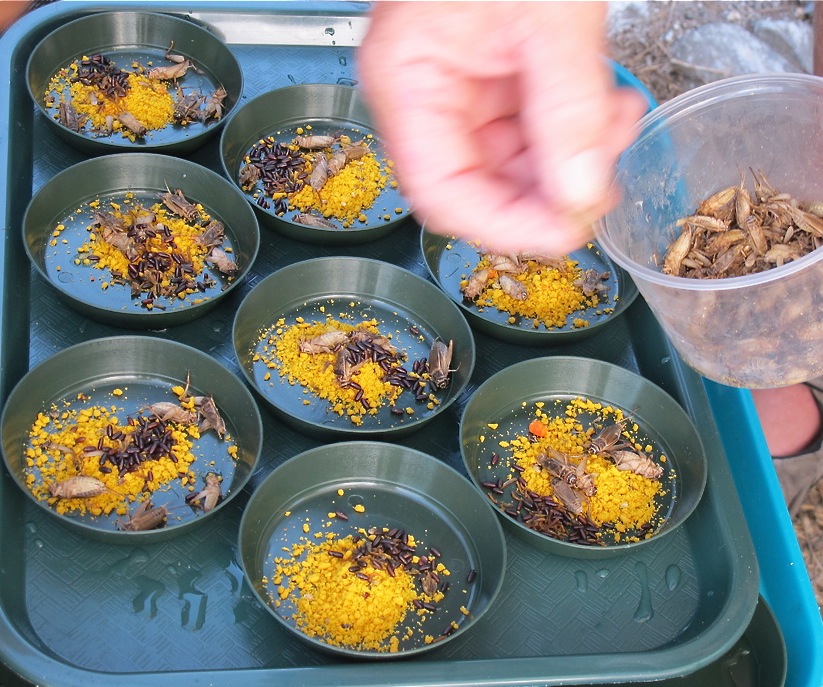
tasty treats for millerbirds

Nihoa Island
Thawed frozen waxworms and crickets, vitamins, and locally-caught live flies
Sept. 6, 2011